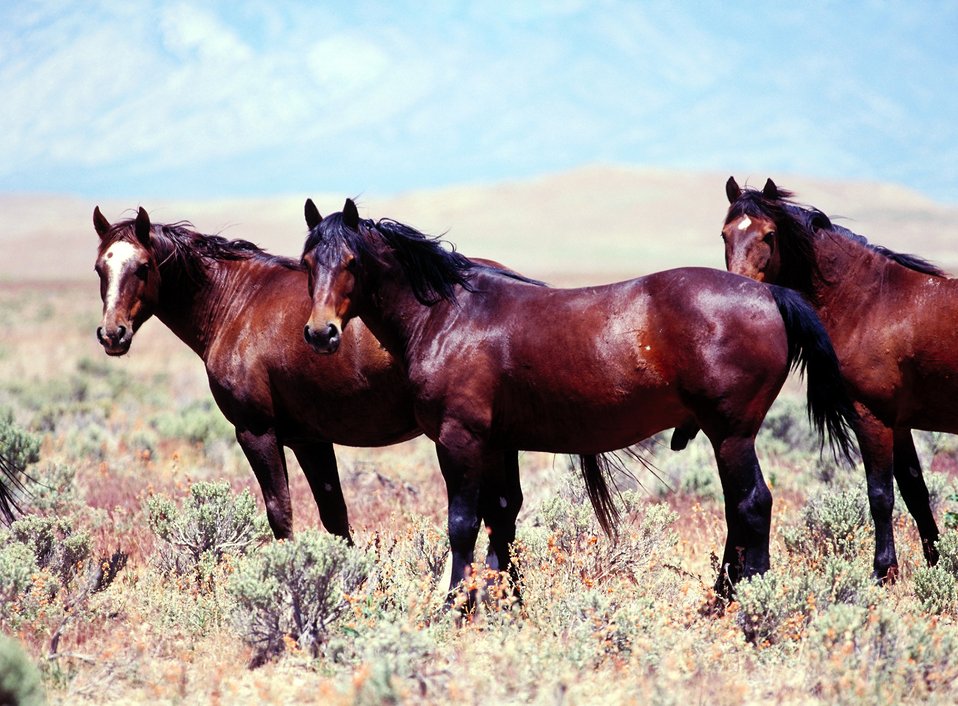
Onaqui Herd near Dugway, Utah.